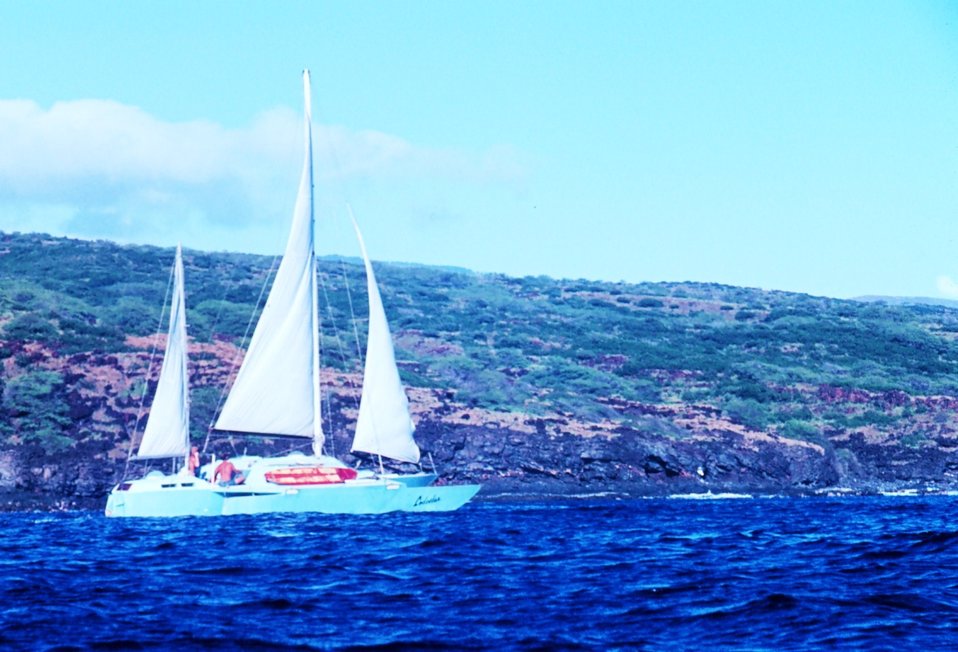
Catamaran sailing off Hawaiian island